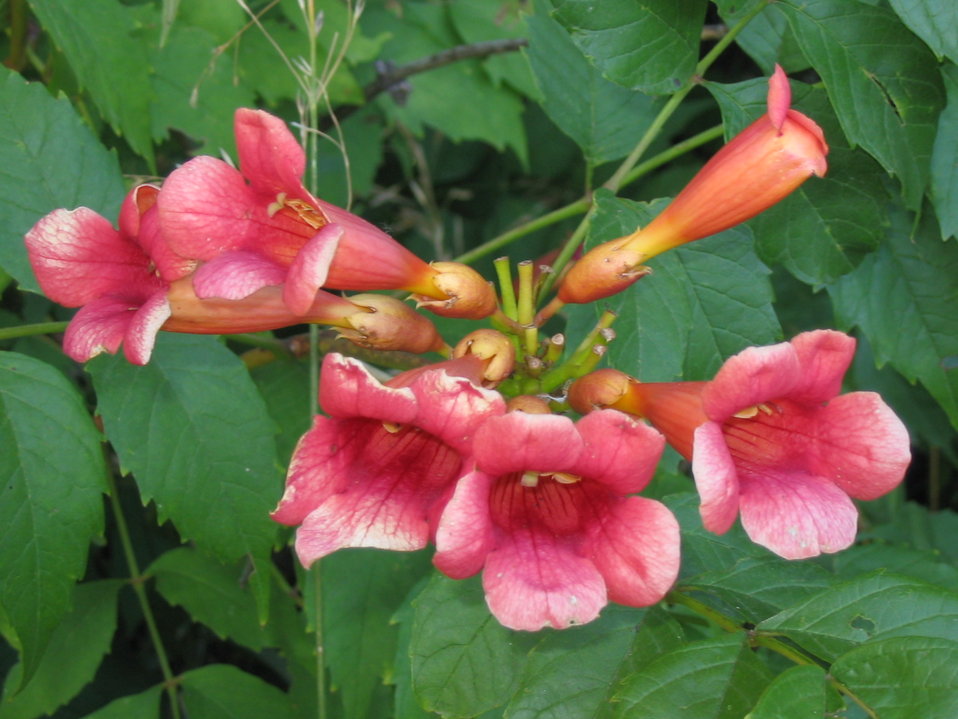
Flowers